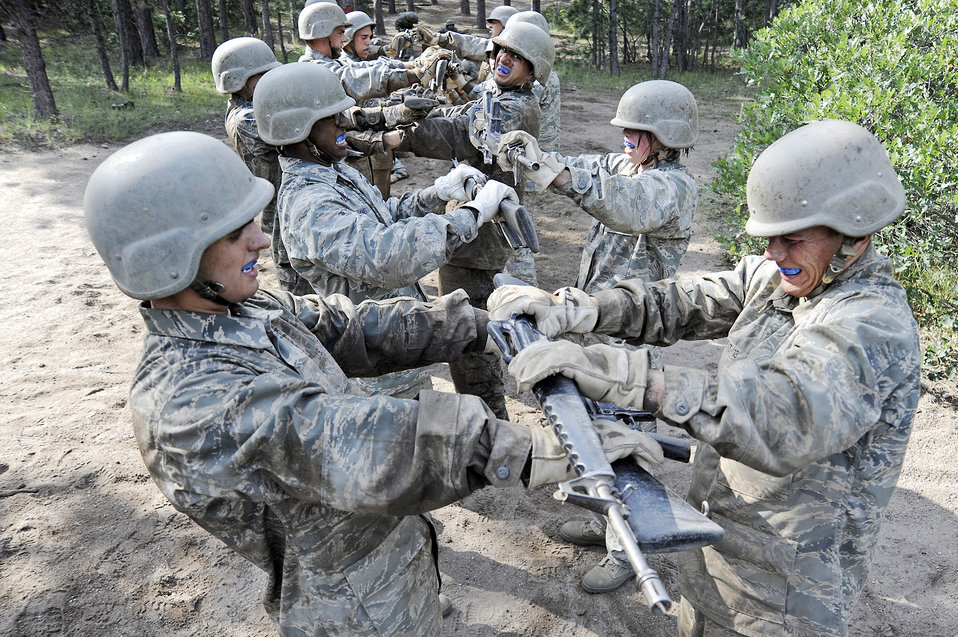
Academy basic field training at Jacks Valley

Air Force Academy basic cadets perform team building exercises in the Jacks Valley Assault Course July 21 near Colorado Springs, Colo. Basic cadet training started June 25 and continues through Aug. 1.